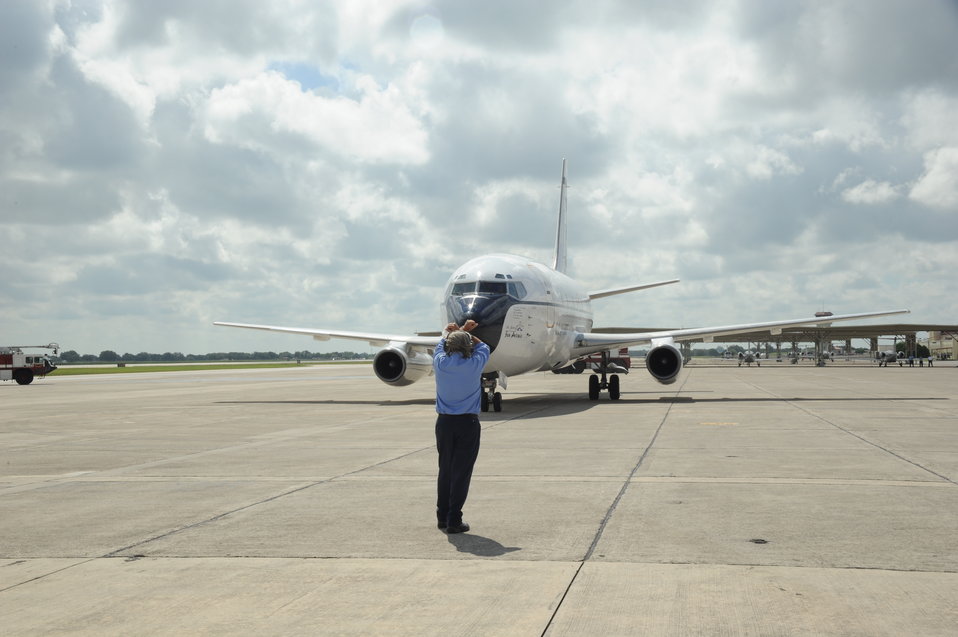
T-43 retires

The last T-43 combat systems officer trainer taxis to a halt on the flightline at Randolph Air Force Base, Texas, Sept. 17, 2010, following its “fini” flight. The T-43, a version of the Boeing 737, retires from the Air Force inventory after 37 years of service as a navigator training platform. The CSO training mission will be moving to Naval Air Station Pensacola, Fla.